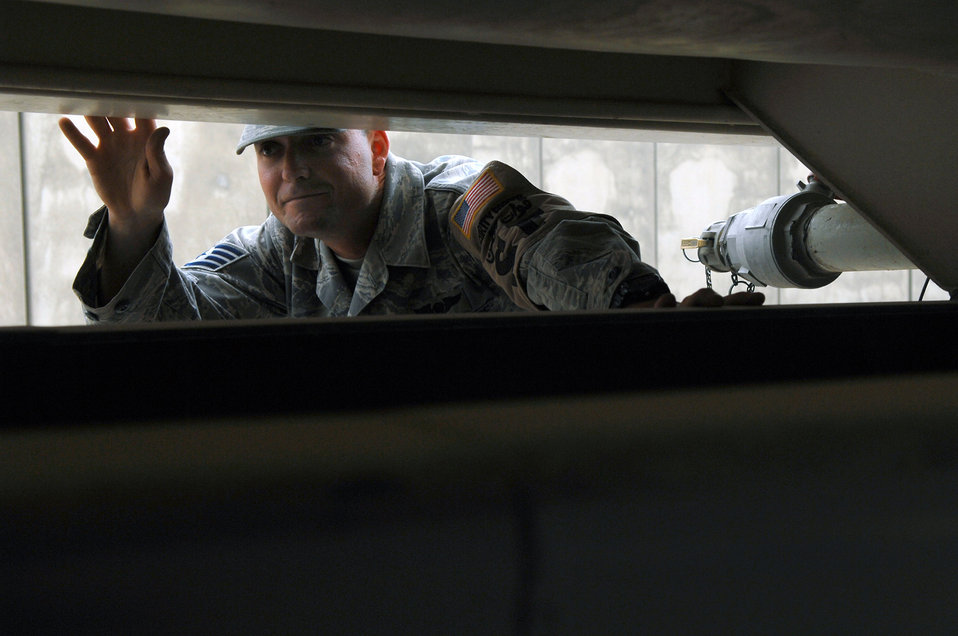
Inspecting and protecting

Staff Sgt. Jesse Wright looks underneath a water truck passing through a gate for questionable items May 17 at Balad Air Base, Iraq. Preventing unauthorized items from entering the base via vehicles or personnel ensures the safety of those assigned to the base. Sergeant Wright is a 332nd Expeditionary Security Forces Squadron force protection inspector deployed from Altus Air Force Base, Okla.